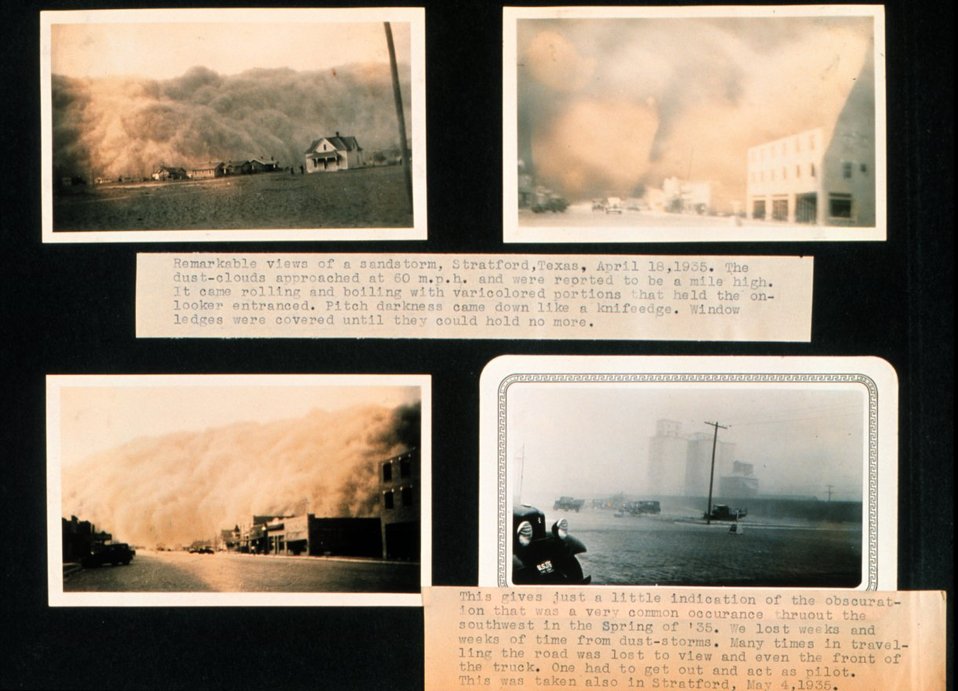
Dust storm approaching Stratford, Texas. Dust bowl surveying in Texas